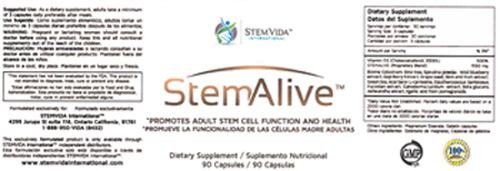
RECALLED – StemAlive 90 Capsules

January 31, 2014 – Product Recall – Stemvida International Corporation Recalls StemAlive 90 Capsules Containing Undeclared Milk.